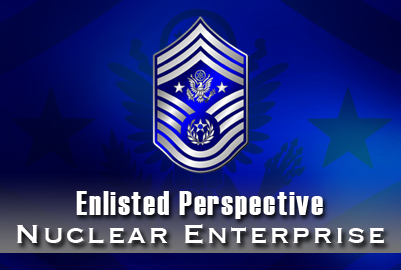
Air Force's top enlisted leader issues nuclear message

In his newest